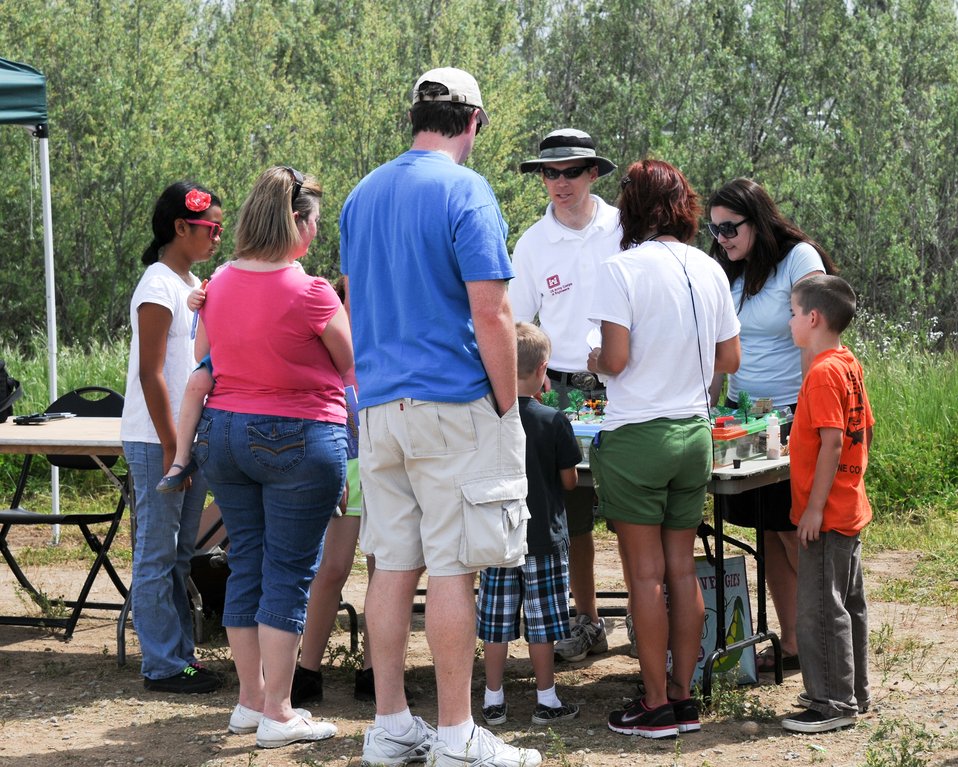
Sacramento District regulators talk wetlands

ROSEVILLE, Calif. (April 18, 2011) -- U.S. Army Corps of Engineers Sacramento District regulatory project managers Zach Simmons (center) and Krystel Bell (right) use a watershed model to show how wetlands clean and filter water during the fourth annual Celebrate the Earth Festival at Mahany Park here April 16.

Bell and Simmons continued the demonstrations started by fellow Corps employees Judy Soutiere and Chandra Jenkins, who explained the Corps' involvement in aquatic ecosystem restoration and watershed planning earlier in the day.
“We’re here to educate the public on what the Army Corps regulatory department does and how important wetlands are to the environment,” Bell said.